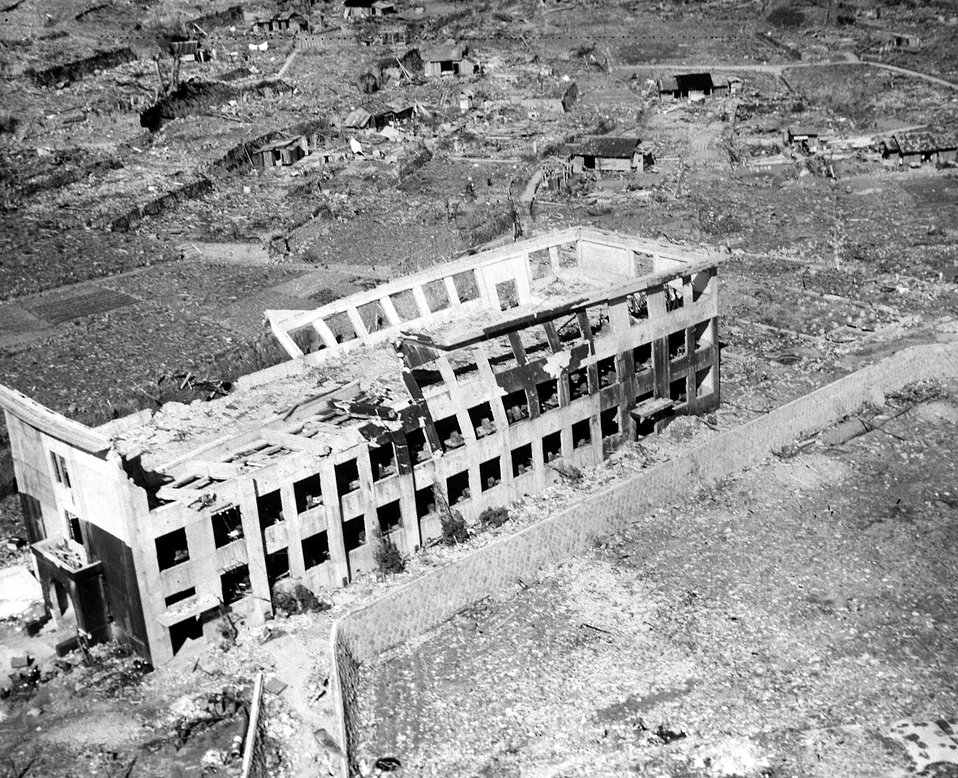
ATOMIC BOMBING OF JAPAN